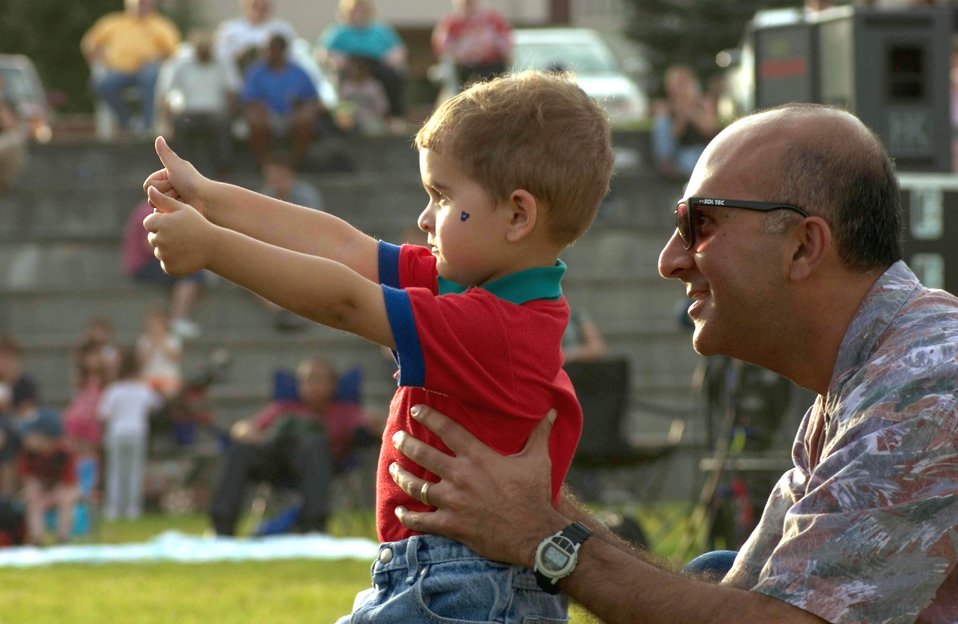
Two thumbs up!

RAMSTEIN AIR BASE, Germany -- Maj. Mahender Dudani watches as his son, Rajan, gives two thumbs up to the U.S. Air Forces in Europe band, Touch and Go, during a concert here Sept. 10.